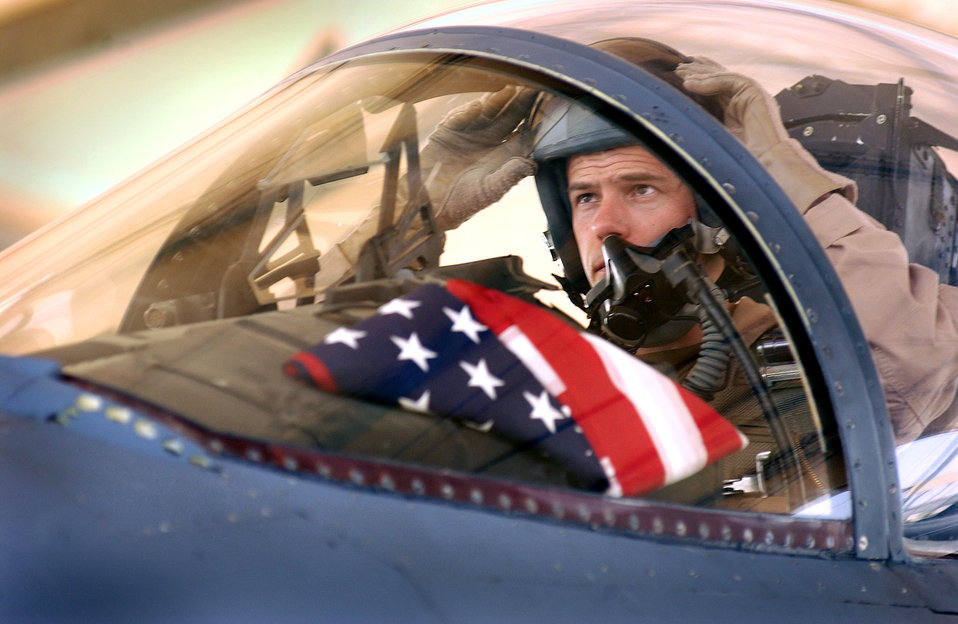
Freedom flight

SOUTHWEST ASIA -- With three American flags on board his F-15 Eagle, Lt. Col. Matt Meloy prepares for a mission at a forward deployed location in Southwest Asia.